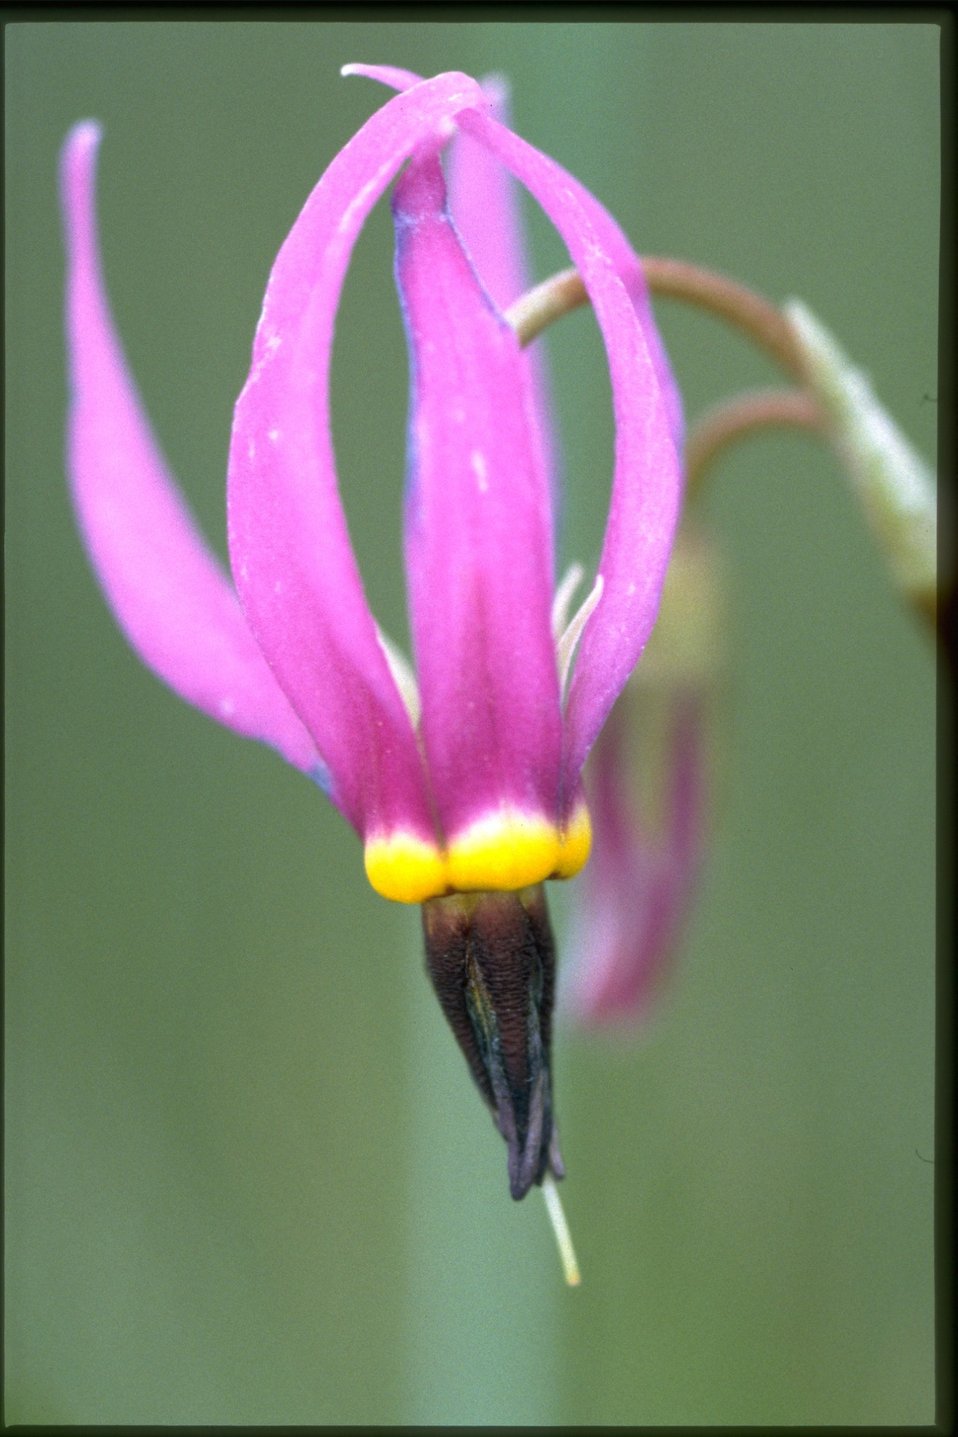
Closeup shot of Dark-Throat Shooting Star, Dodecatheon Pulchellum wildflower.